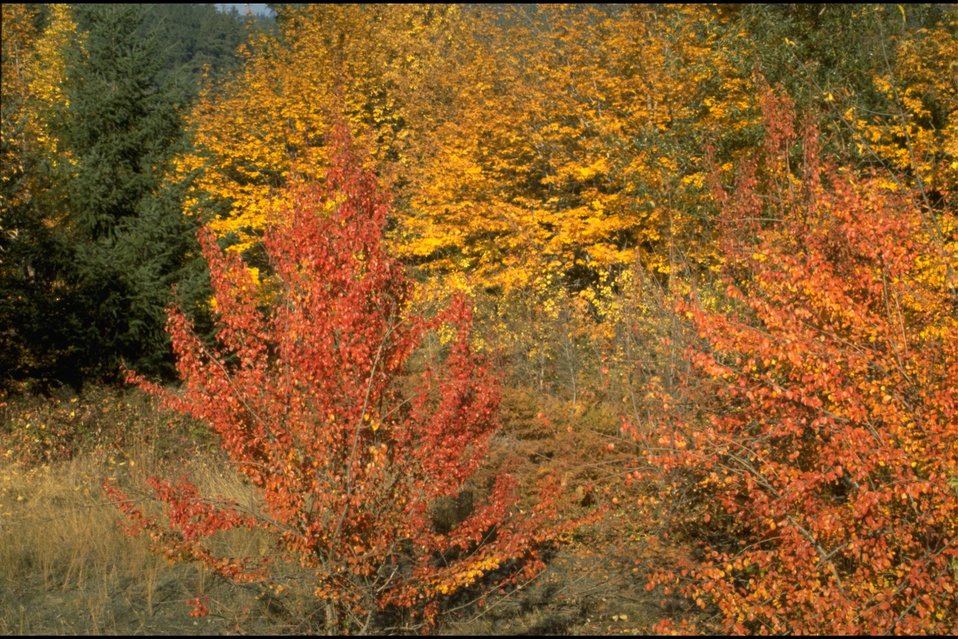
Rogue River, Fall Colors.